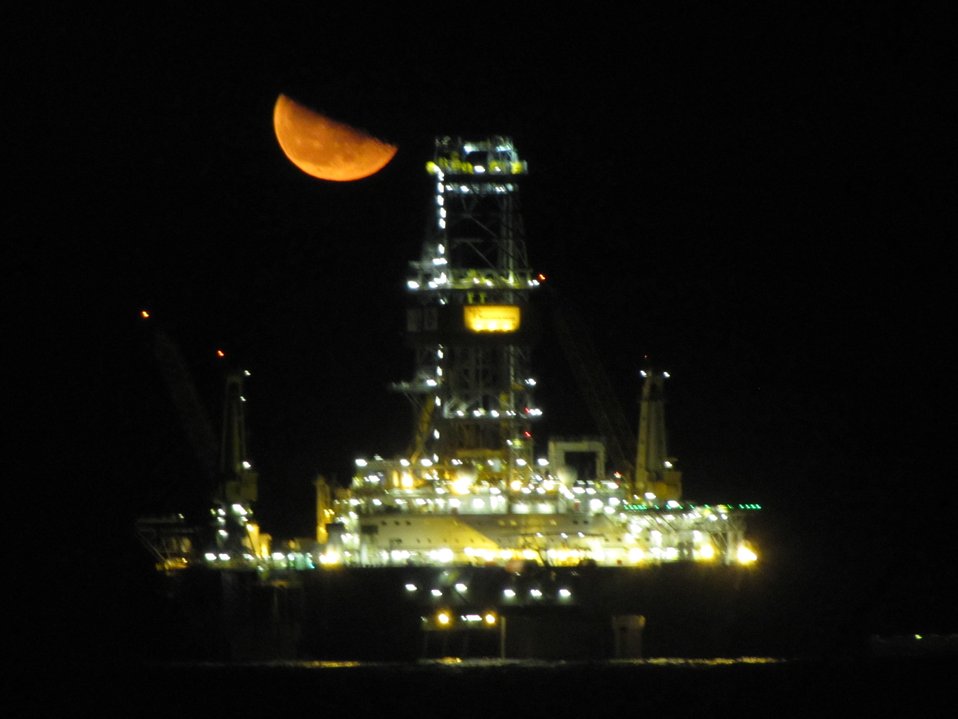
A view of a Deepwater Horizon disaster relief drill vessel with a half moon rising? setting?